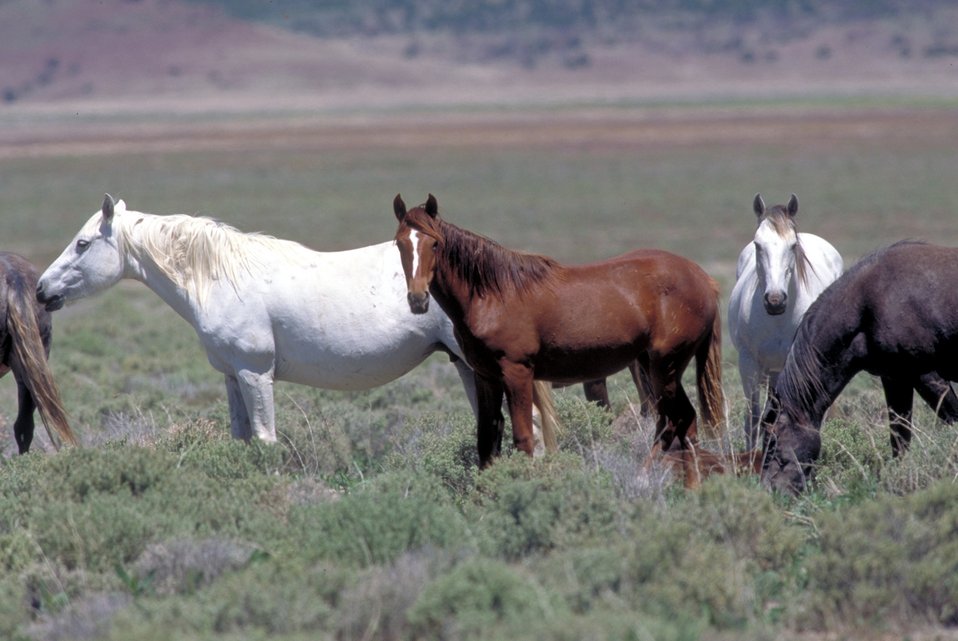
Onaqui Herd near Dugway, Utah.